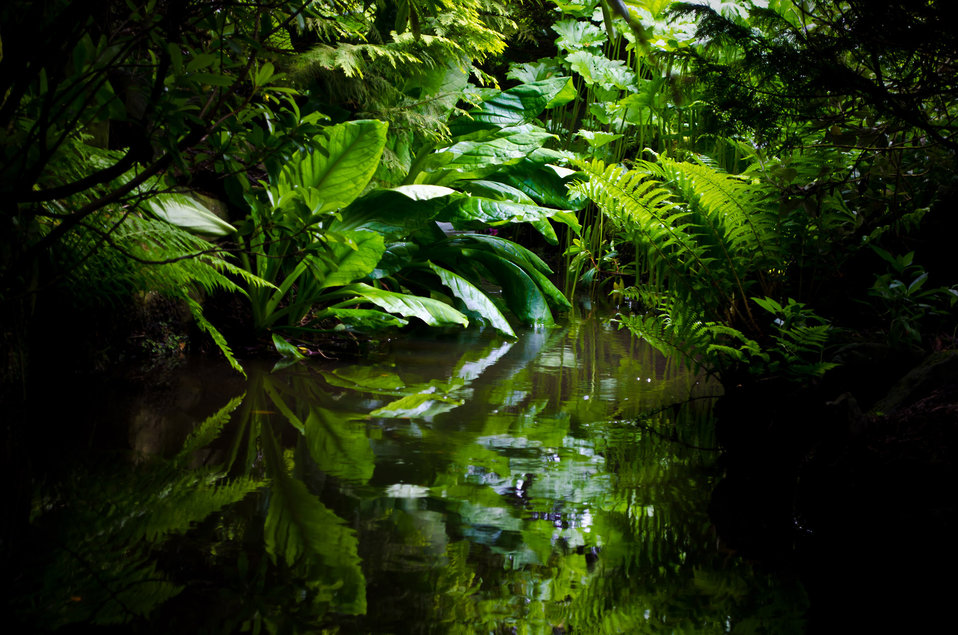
Jungle

Green jungle.